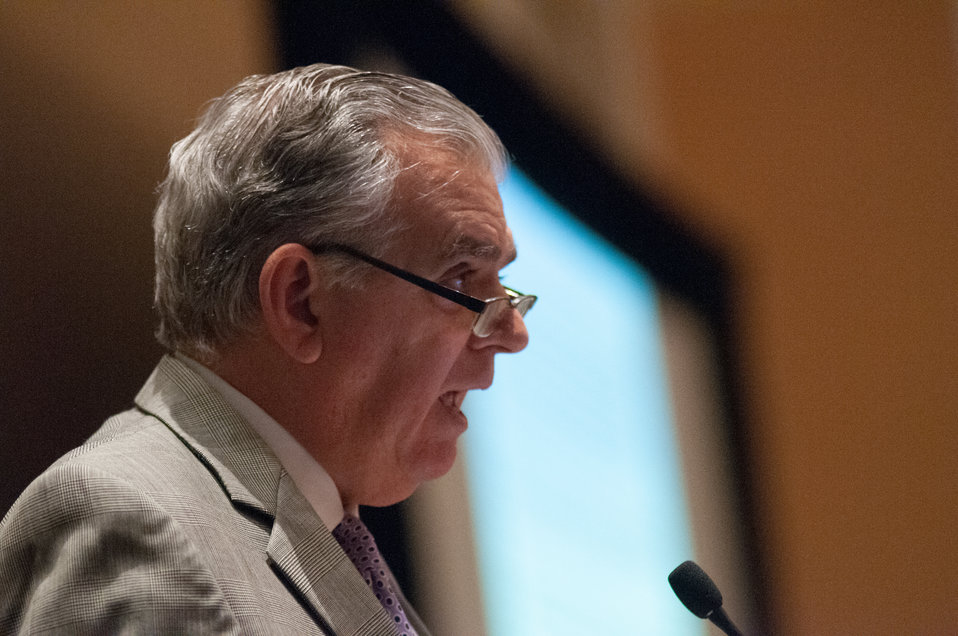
Department of Transportation (DOT) Secretary Ray LaHood speaks about extending for five years its agreement to work with DOT Federal Aviation Administration (FAA) and other partners to help develop a viable biofuel for the aviation industry. The Secretary signed the agreement with U.S. Department of Agriculture (USDA) Secretary Tom Vilsack at the Advanced Biofuels Leadership Conference at Gaylord National Harbor in Maryland, Monday, April 15, 2013.